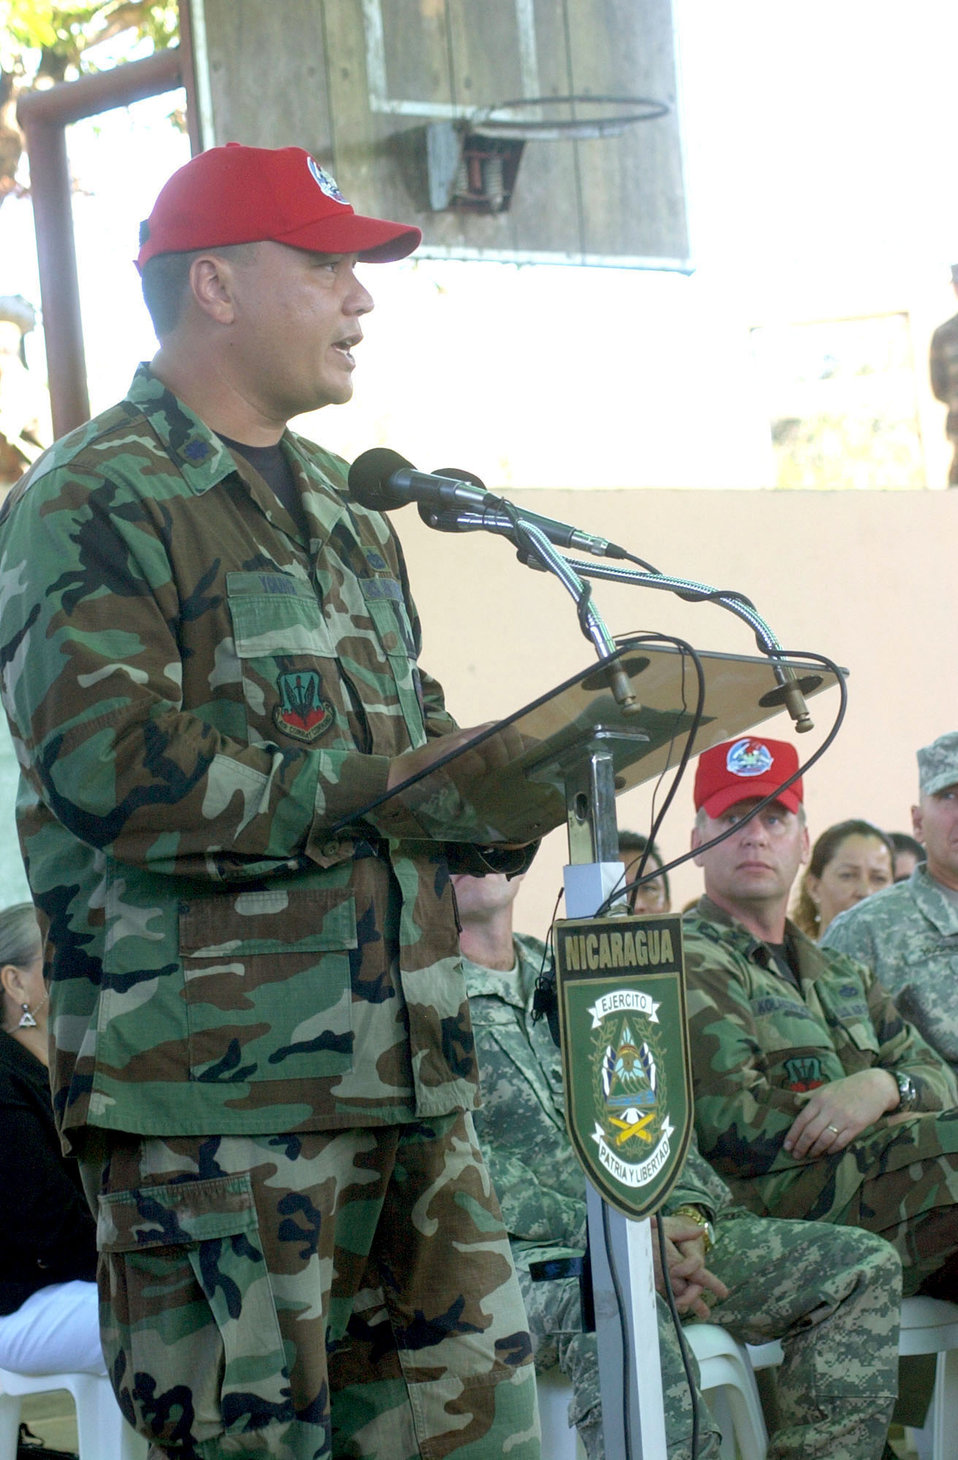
820th Red Horse starts 'New Horizons' project in Nicaragua

Lt. Col. Aaron Young, commander of the 820th Expeditionary Red Horse Squadron, thanks the people of Nicaragua for their hospitality during the opening ceremony for New Horizons in Santa Teresa, Nicaragua, Feb. 15. The squadron, along with members from other branches of service, will build a new school and medical clinic for the people here.